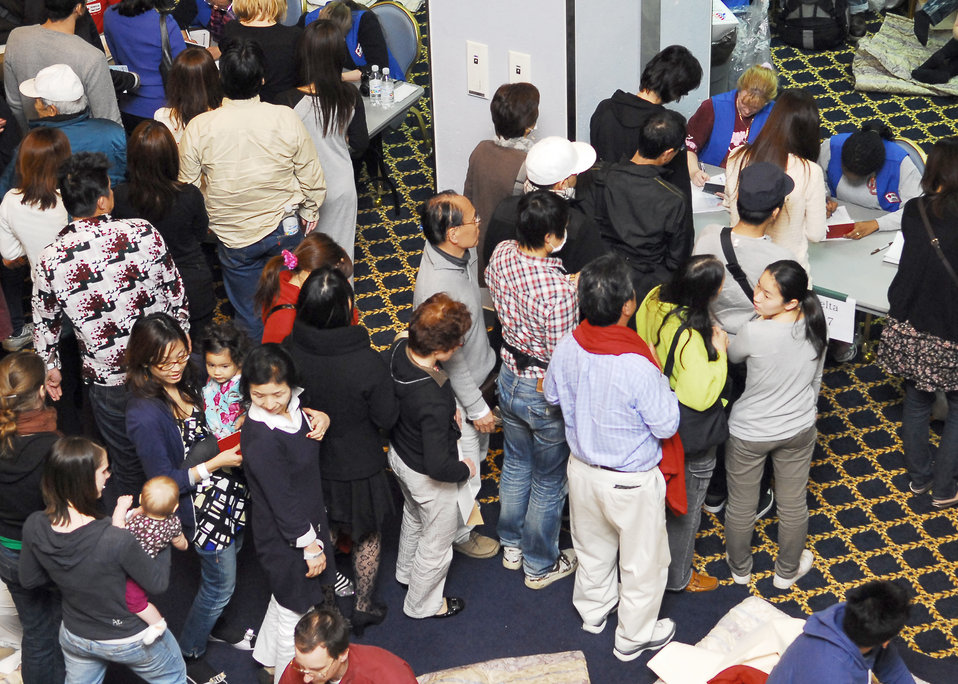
Taking shelter

American Red Cross volunteers assist passengers of a commercial airline flight March 11, 2011, at Yokota Air Base, Japan. Base officials there provided food and shelter to passengers of aircraft diverted from Narita International Airport in Tokyo, due to an 8.9-magnitude earthquake.